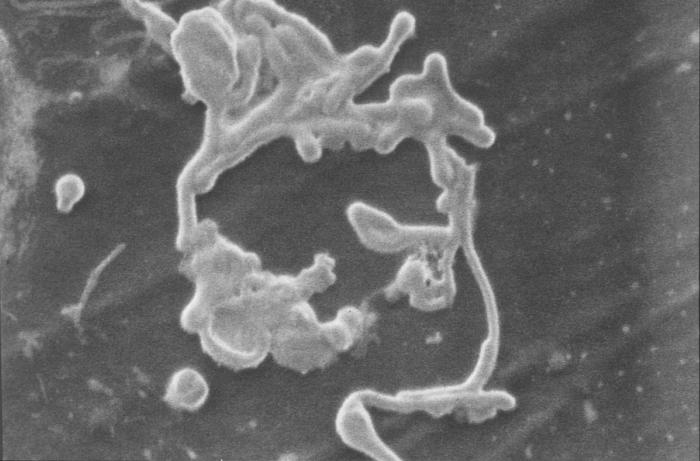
This scanning electron micrograph (SEM) revealed some of the ultrastructural morphologic features displayed by the Ebola virus discovered from the Ivory Coast of Africa.